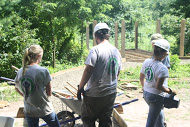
Conte YCC 2013

U.S. Fish and Wildlife Service